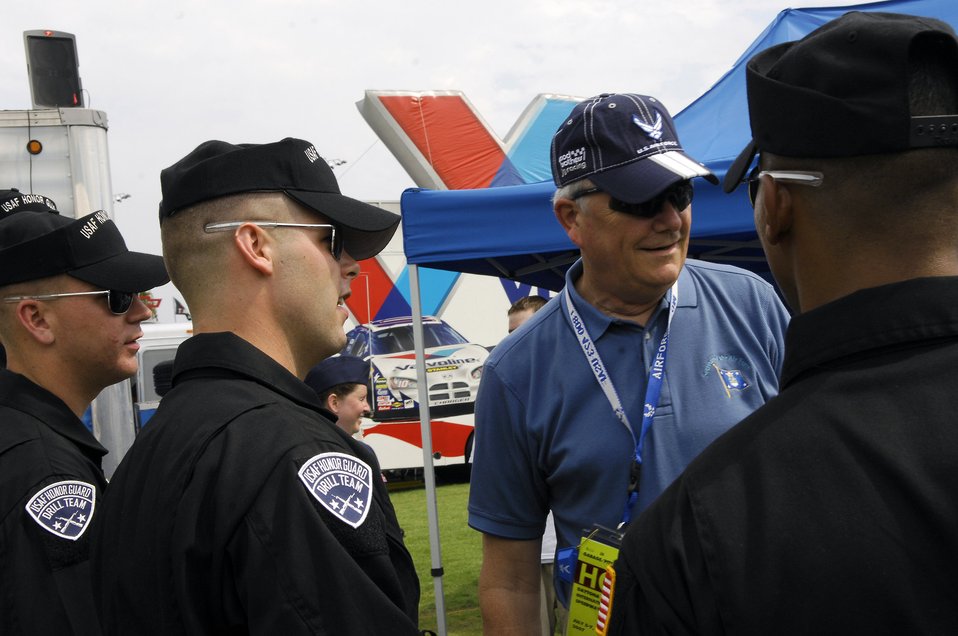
Drill team performs at NASCAR race

Secretary of the Air Force Michael W. Wynne and members of the Air Force Drill Team congratulate the new delayed enlistees before the NASCAR race July 7 at Daytona International Speedway in Florida. The team joined the secretary in celebrating the Air Force's 60th anniversary with NASCAR fans and representing the Air Force as a part of the